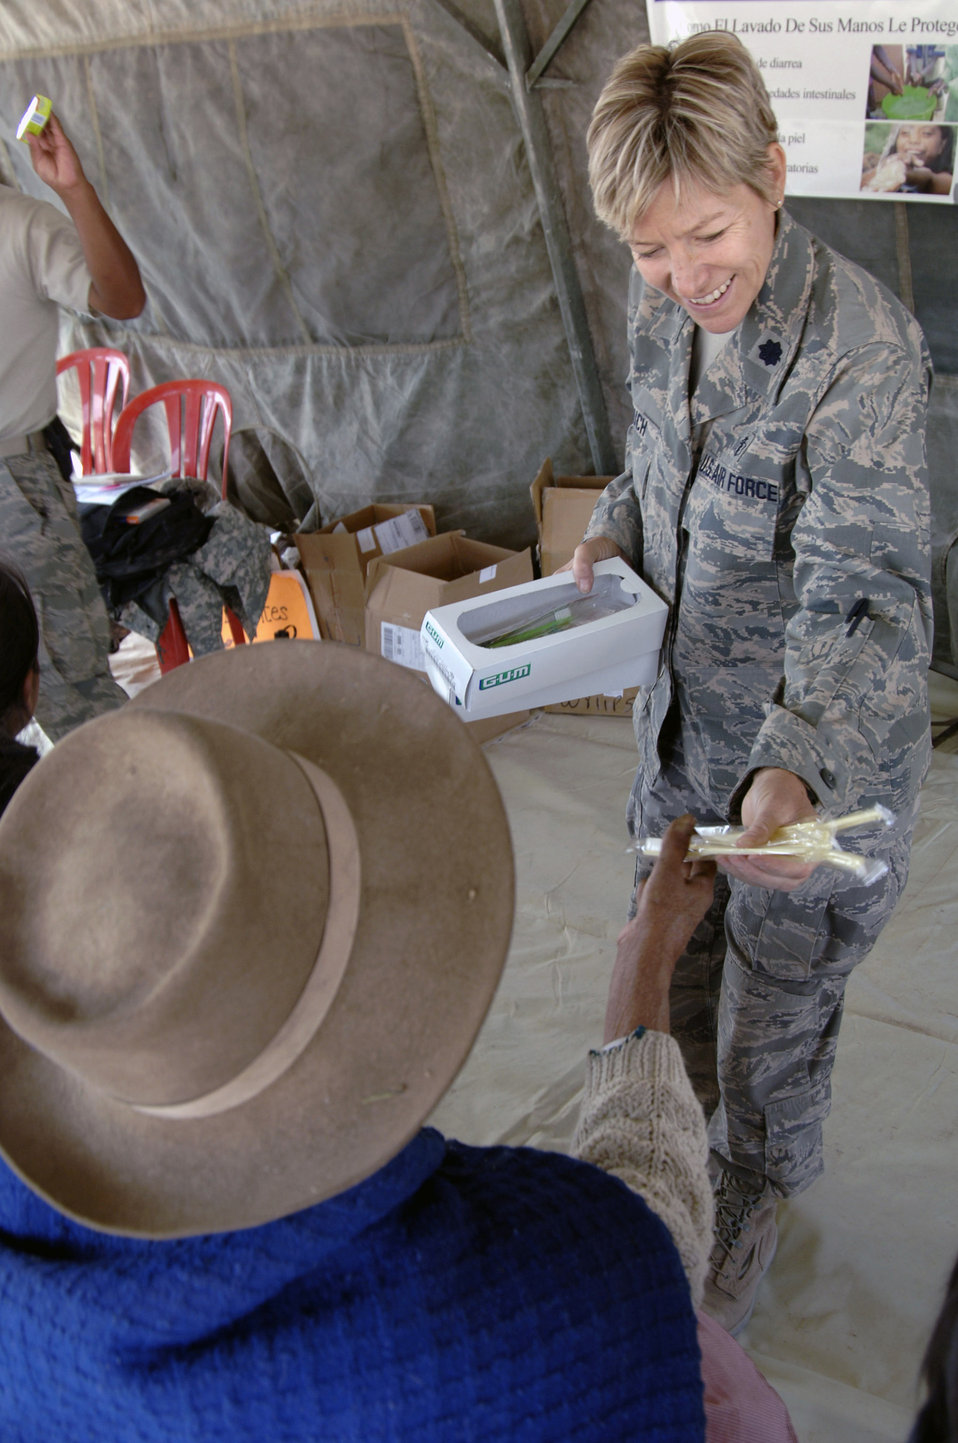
Despite reduced numbers, final New Horizons MEDRETE a success

Lt. Col. Helen Crouch passes out toothbrushes to Peruvian people listening to a public health lecture during a medical mission in Mollepata, Peru, Aug. 1. A team of 19 medical personnel deployed to Ayacucho, Peru, to support the final three of nine medical missions supporting New Horizons - Peru 2008. The mission is a U.S. and Peruvian effort to bring humanitarian aid to underpriviliged Peruvians. Colonel Crouch is from the 433rd Medical Group at Lackland Air Force Base, Texas.